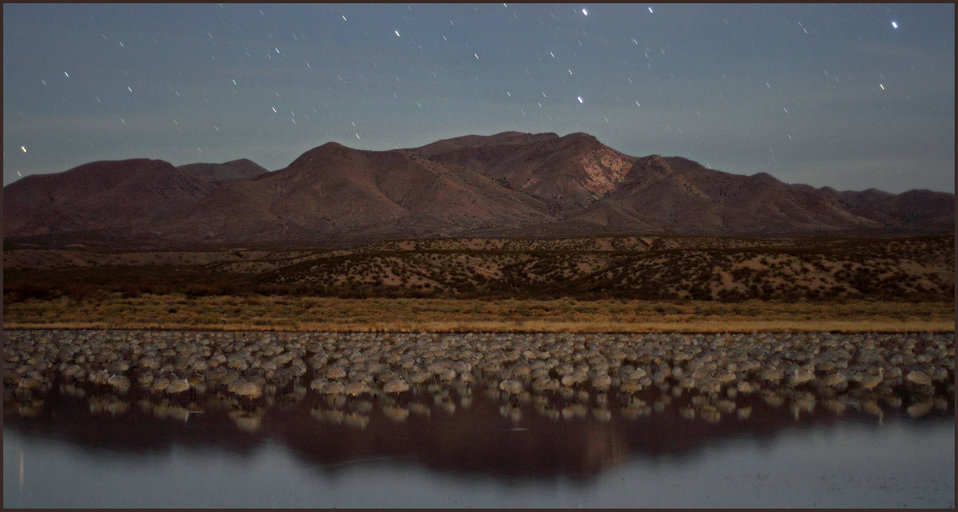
Bosque del Apache at night

Sandhills cranes sleep under a starry sky at Bosque del Apache National Wildlife Refuge, NM.